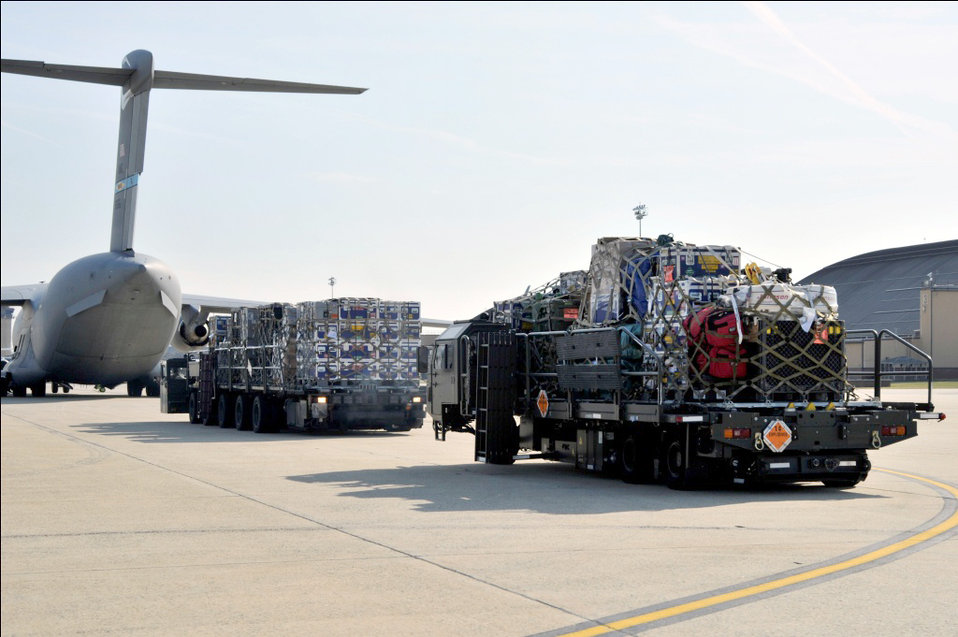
Mobility Airmen

Rescue equipment bound for Japan is moved to a C-17 Globemaster III March 12, 2011, at Joint Base Andrews, Md. Air transportation Airmen from the 89th Aerial Port Squadron prepared 14 pallets of technical search-and-rescue gear, including inflatable swift-water rescue boats, generators, trench rescue and cutting equipment. The gear is being transported by C-17 to provide assistance after an earthquake and tsunami hit Japan March 11, 2011.